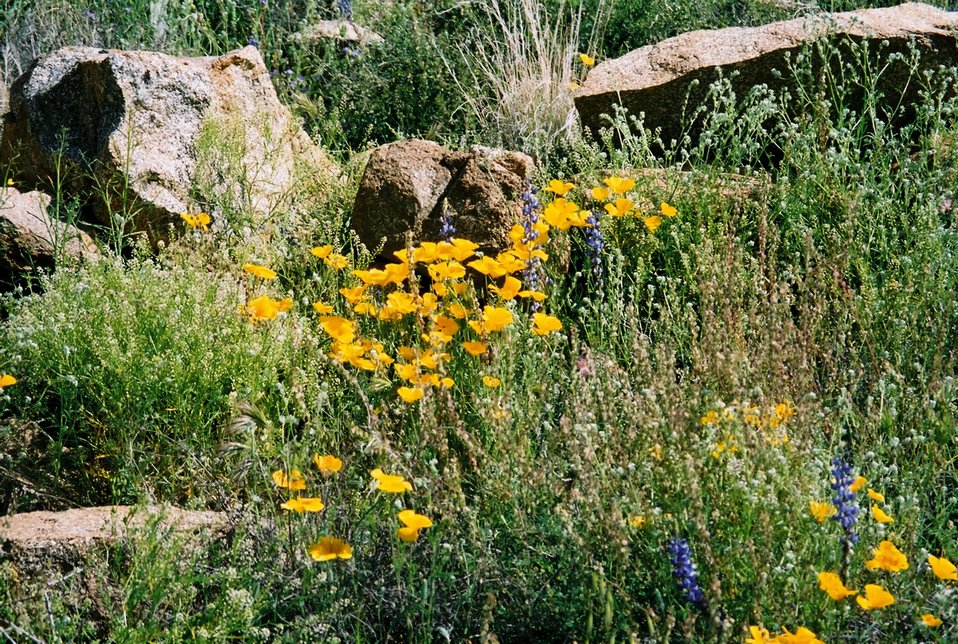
Many different kinds of beautiful wildflowers grow in the Agua Fria National Monument.